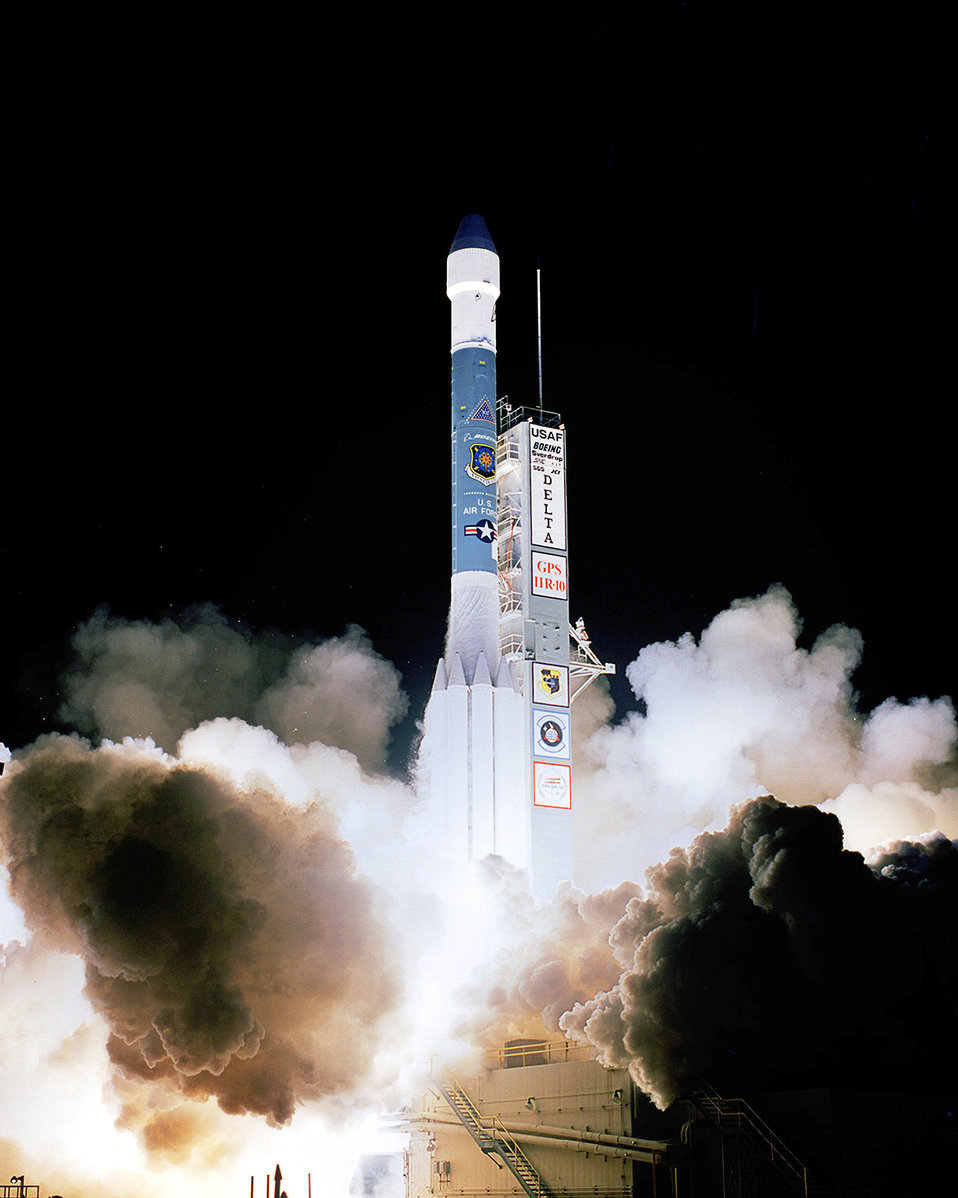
Rocket launch

CAPE CANAVERAL AIR FORCE STATION -- A Delta II rocket launches from here Dec. 21. It is carrying a Global Positioning System satellite that helps warfighters with strategic battlefield information.